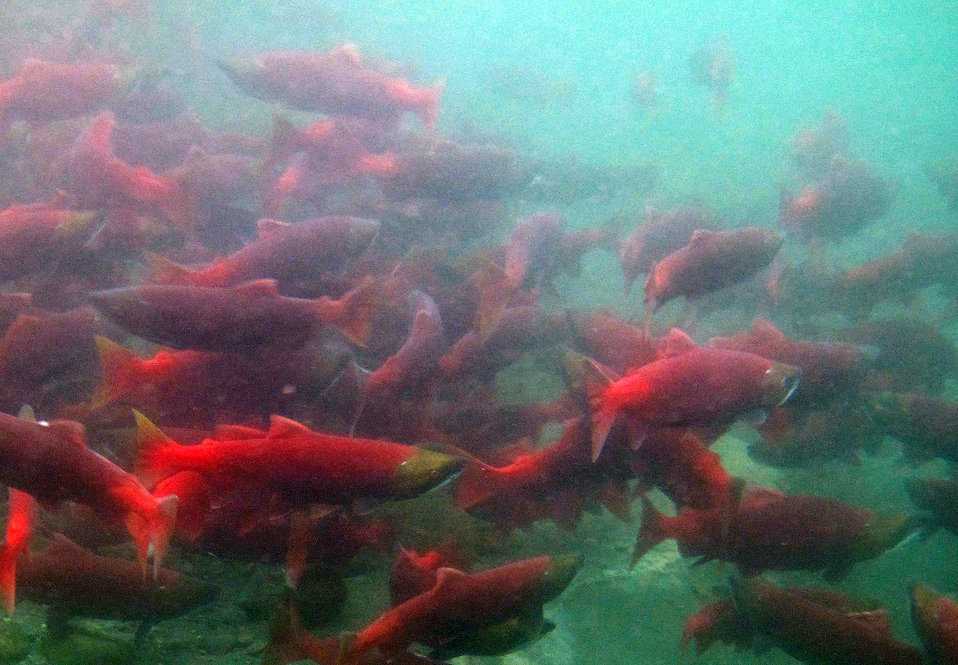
Sockeyes schooling in Hidden Lake